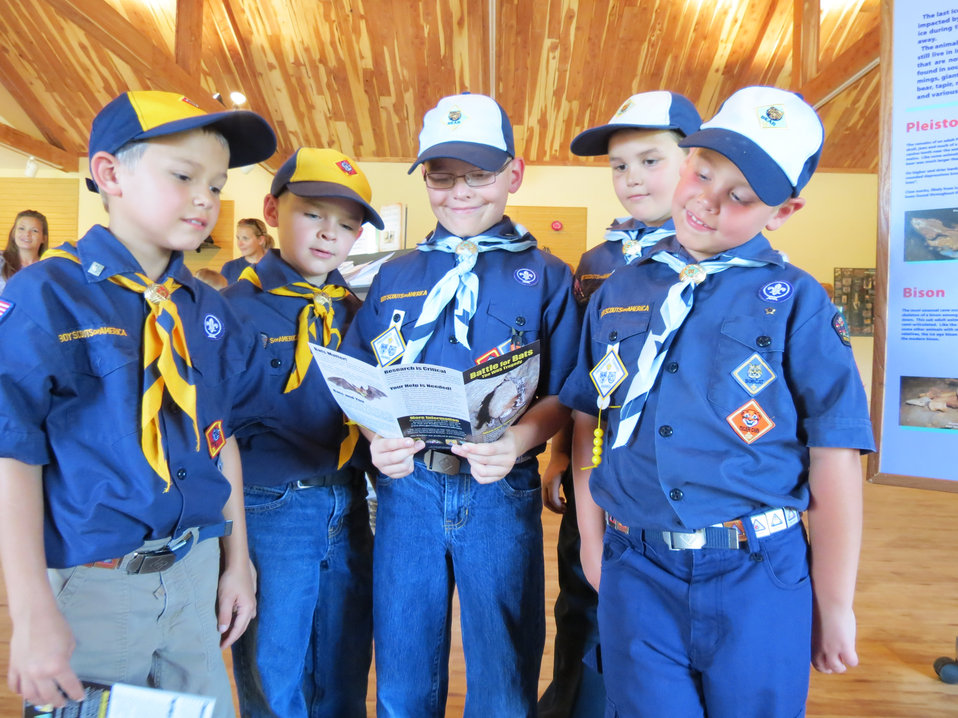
Battle for Bats 3

Members of Cub Scout Pack 22 learn more about white-nose syndrome at Indiana Caverns near the Hoosier National Forest in Indian as part of the filming for “Battle for Bats.” The scouts learned how to clean gear as part of the effort to prevent the spread of WNS.